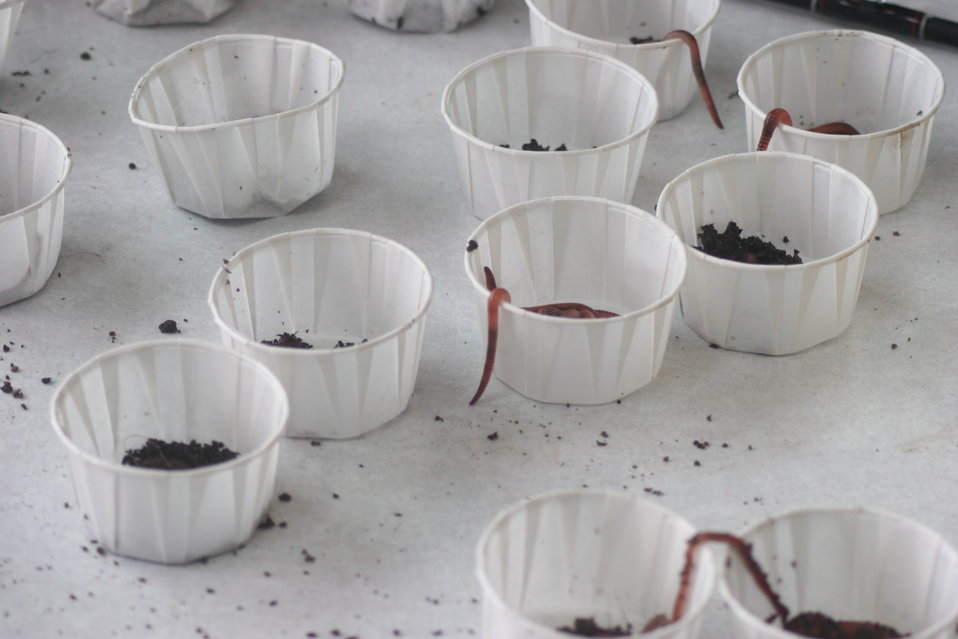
Bait

Fishing event at U.S. Fish and Wildlife Service Regional Office in Hadley, MA